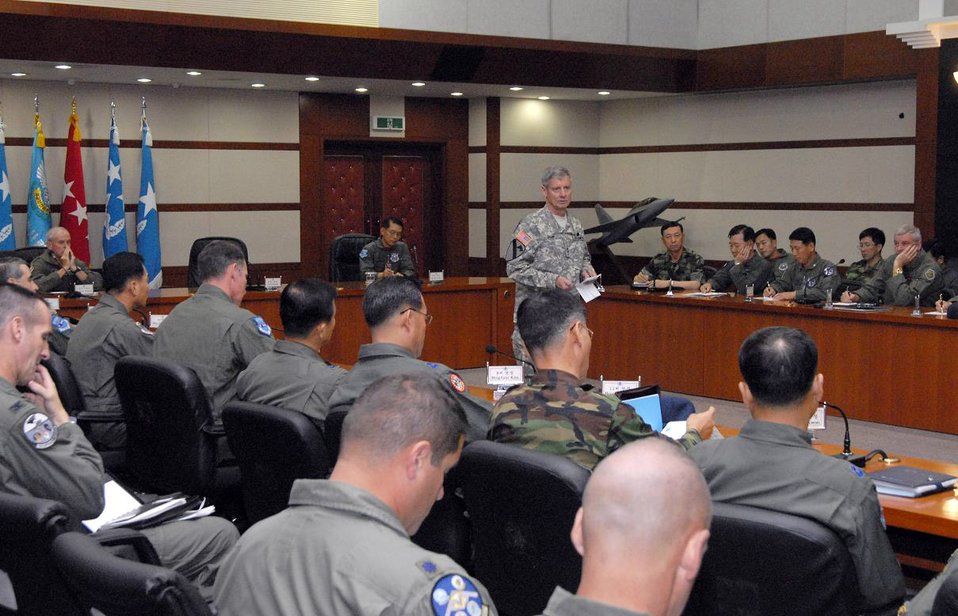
Air Boss Conference participants listen to a briefing from the U.S. Forces Korea Commander Gen. Walter Sharp June 26 at Osan Air Base, South Korea.